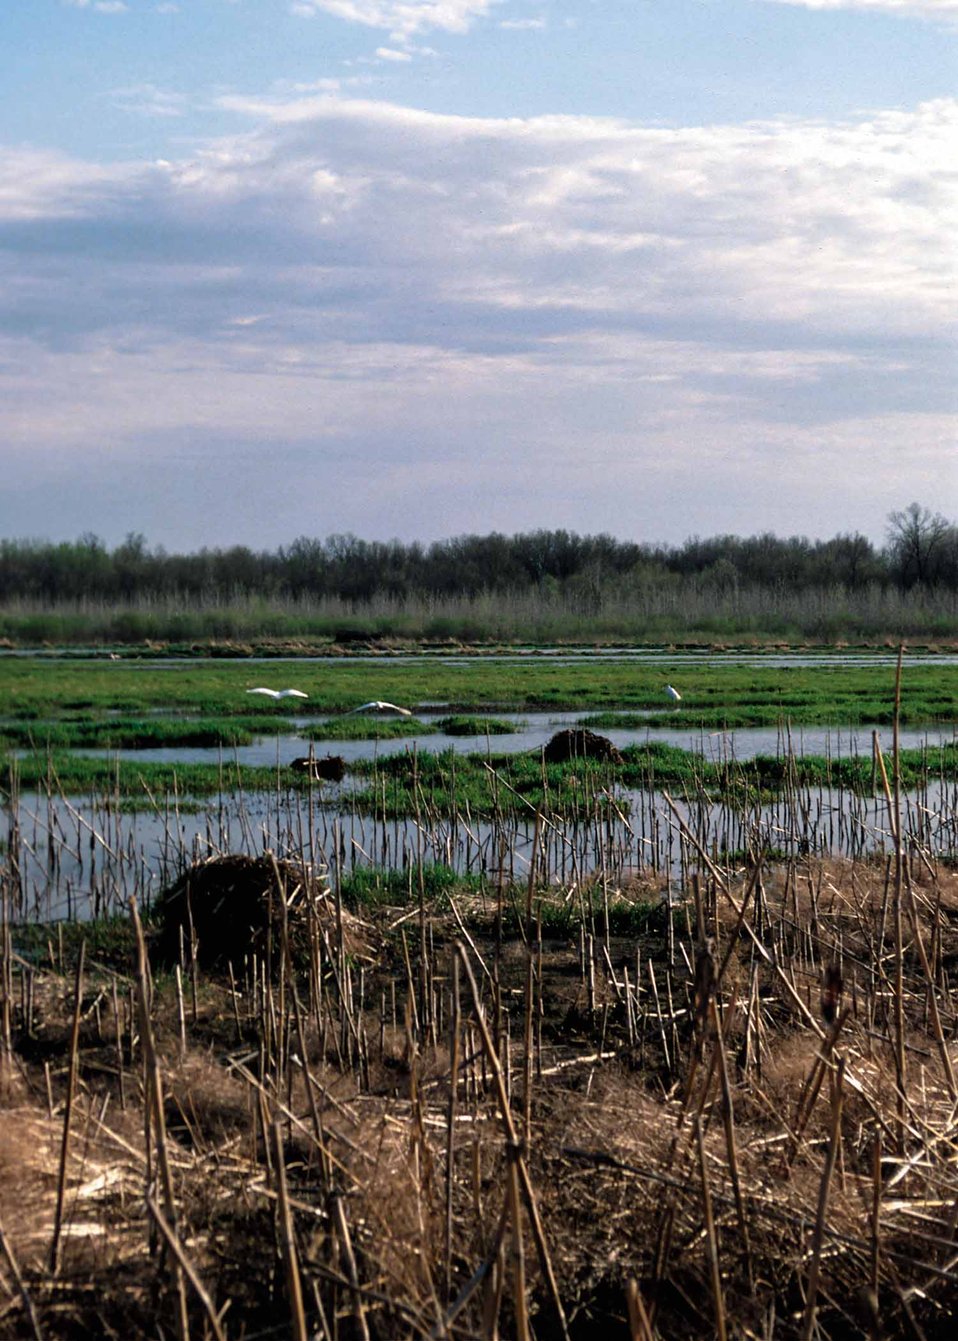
Restored wetland along the Fox River in Van Buren County on the Rolland Betts farm.